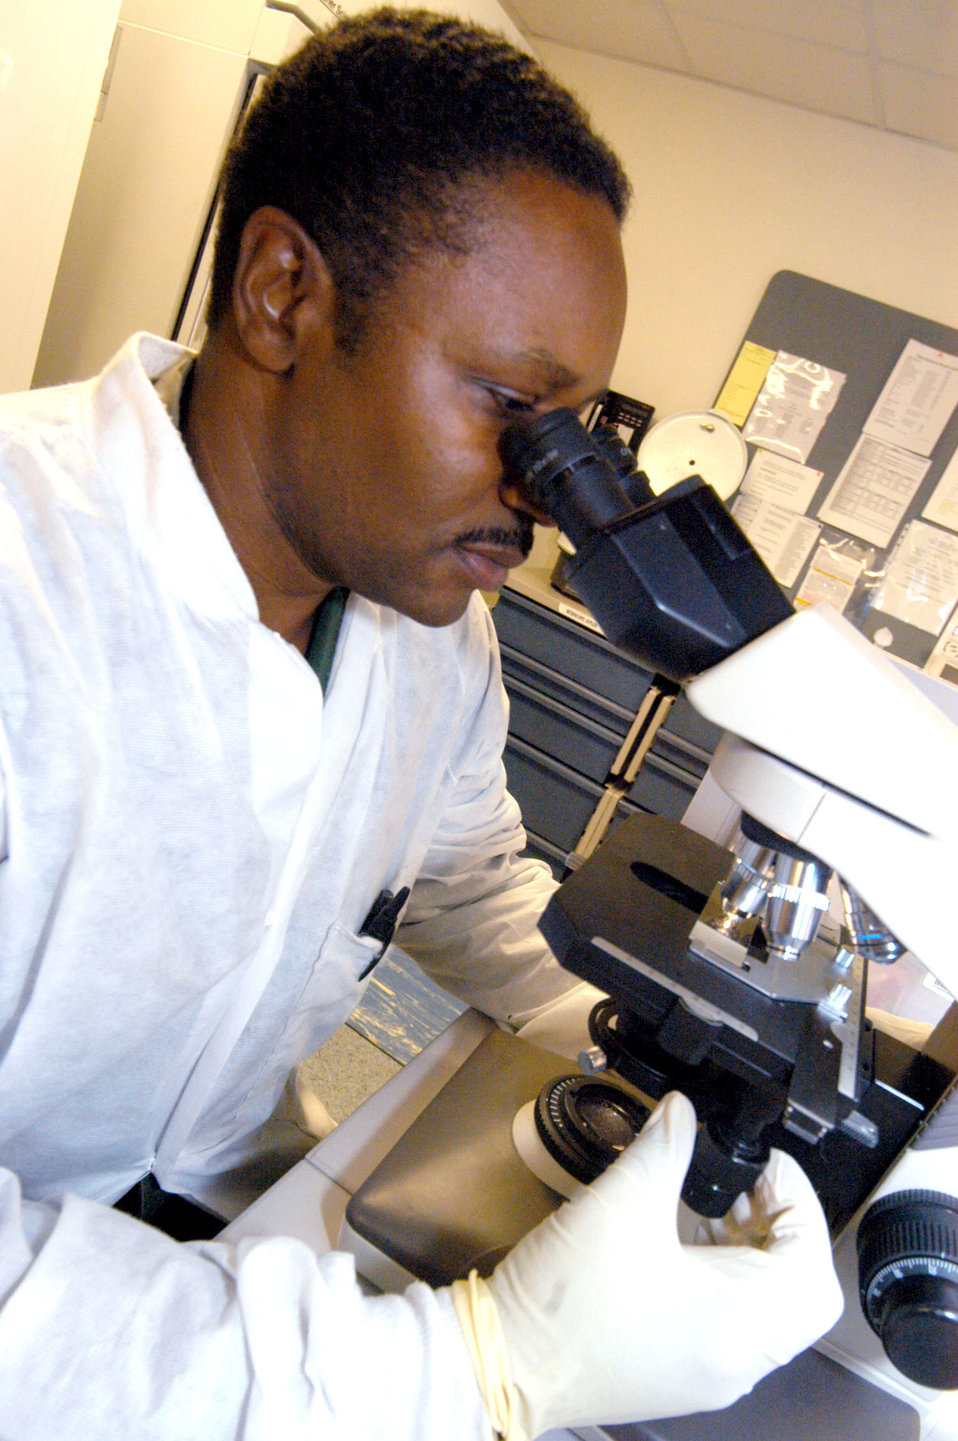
Analyze this

ROBINS AIR FORCE BASE, Ga. -- Master Sgt. Roderick Capers analyzes a fluid sample on a slide. He is superintendent of lab service for the 78th Medical Group here. Lab technicians support the group's various departments, analyzing hundreds of fluid and tissue samples each day to help physicians diagnose patient ailments.